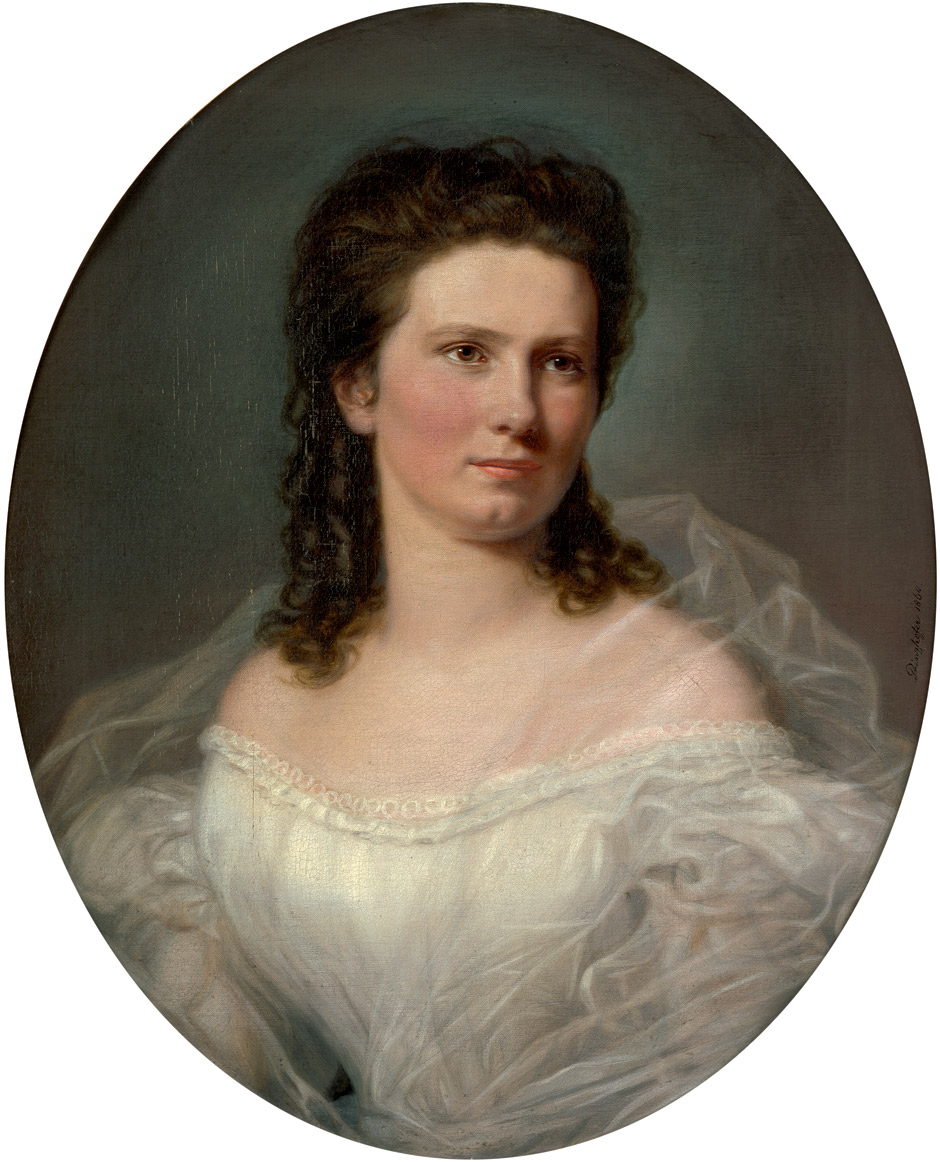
August Prinzhofer Portrait Nina Kienzel